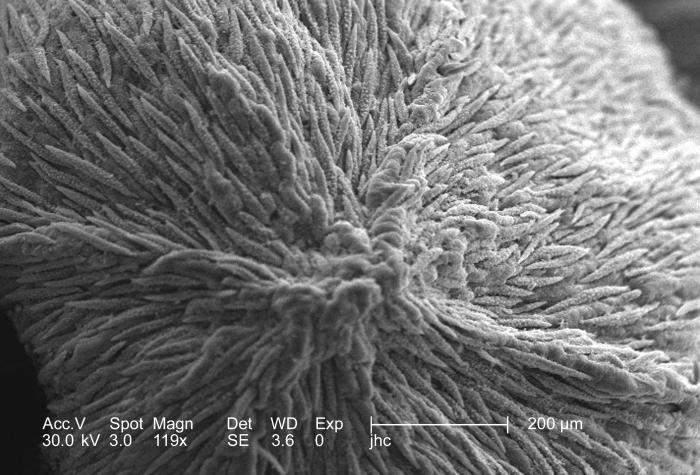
Magnified 119x, this scanning electron micrograph (SEM) revealed some of the morphologic ultrastructural surface details of one of the very small flower buds clustered in the center of a white dogwood flower, Cornus florida. Due to the extremely small size of the centrally located clustered flowers, the larger colored "bracts" that are actually modified leaves, which protect the flowers themselves, are also mistaken for flower petals. If you look carefully, you'll notice that the small flower petals come together in a confluence at its tip, and will burst open at this point when the flower blossoms.